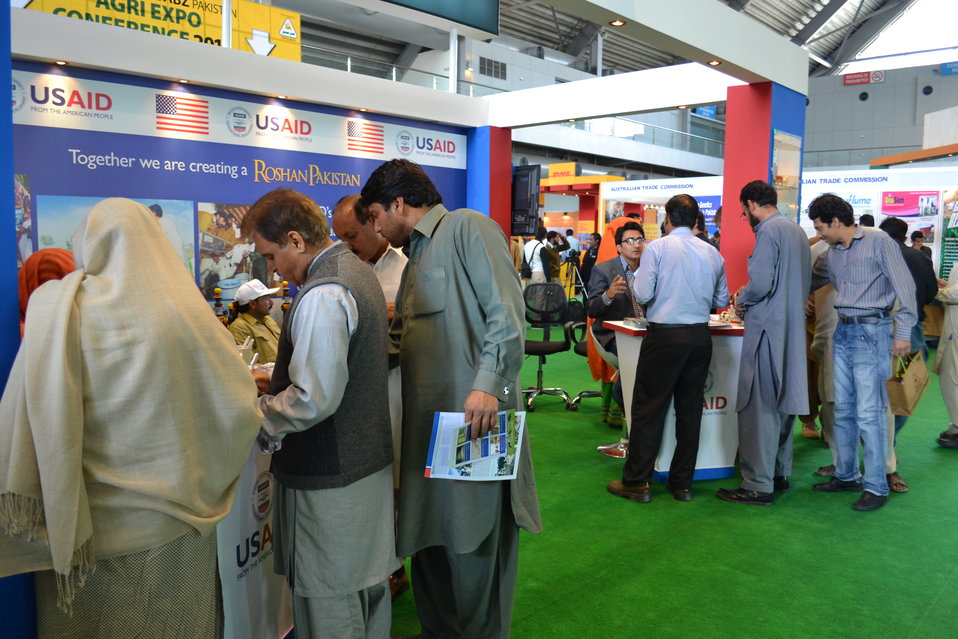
Dairy Project at Dawn Expo 2014